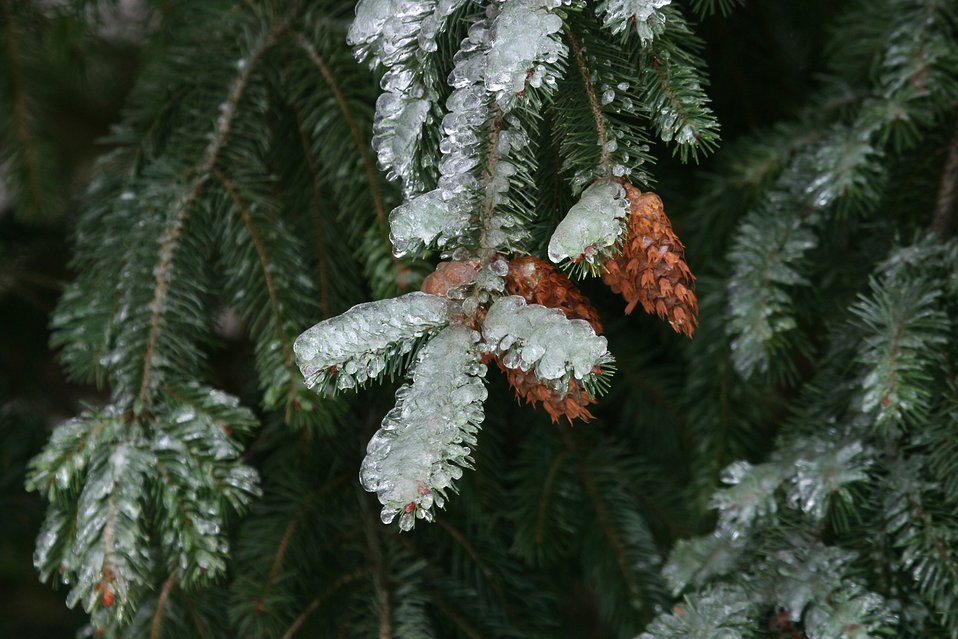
Snow and ice on Douglas Fir Bows and cones during the storm of January 2004.